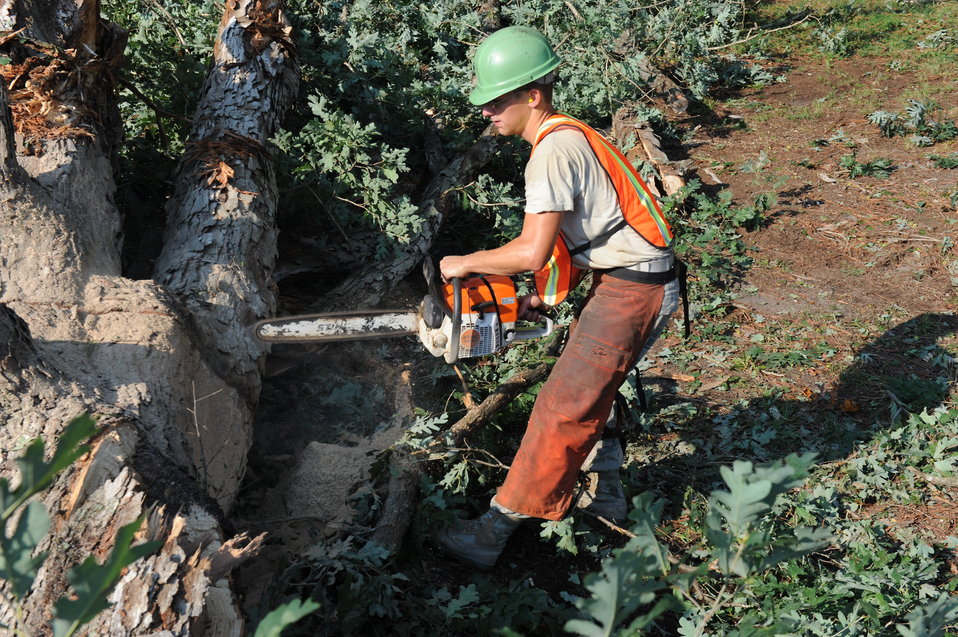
SJAFB cleans up after Irene

Senior Airman Jacob Russell saws through the trunk of a tree that fell in the aftermath of Hurricane Irene at Seymour Johnson Air Force Base, N.C., Aug. 28, 2011. The 4th Civil Engineer Squadron Heavy Equipment Flight used chainsaws, bulldozers and backhoes to cut and remove dozens of fallen trees and branches to clean up the base. Russell is a 4th CES heavy equipment operator.